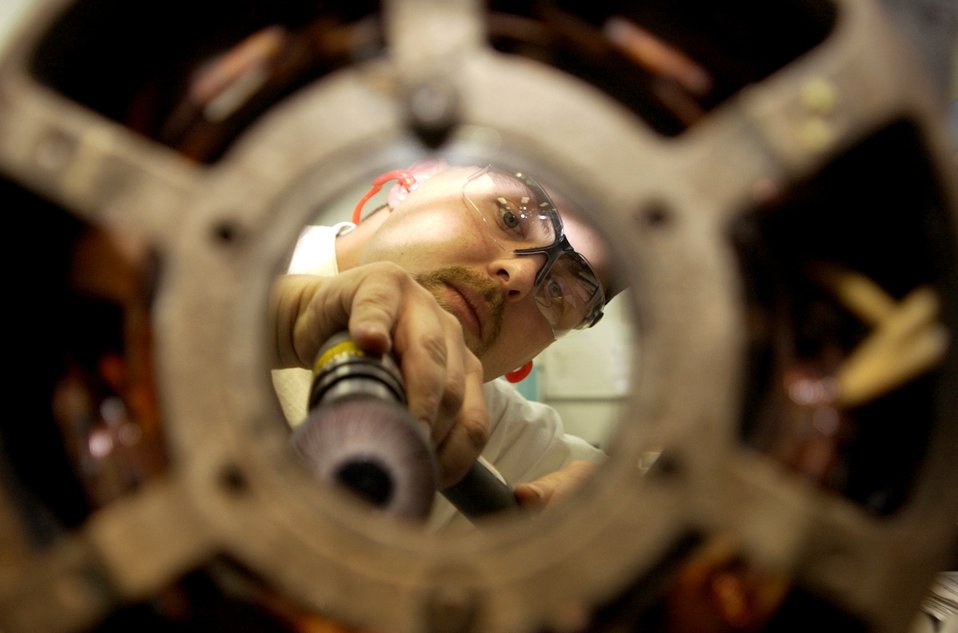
Creating power behind airpower

HILL AIR FORCE BASE, Utah -- In the air-cooled section of the 309th Generator Squadron's airborne flight, Casey Maw uses a sanding disk to clean the outer casing of a C-5 Galaxy generator. The flight is responsible for restoring more than 4,200 aircraft generators a year.